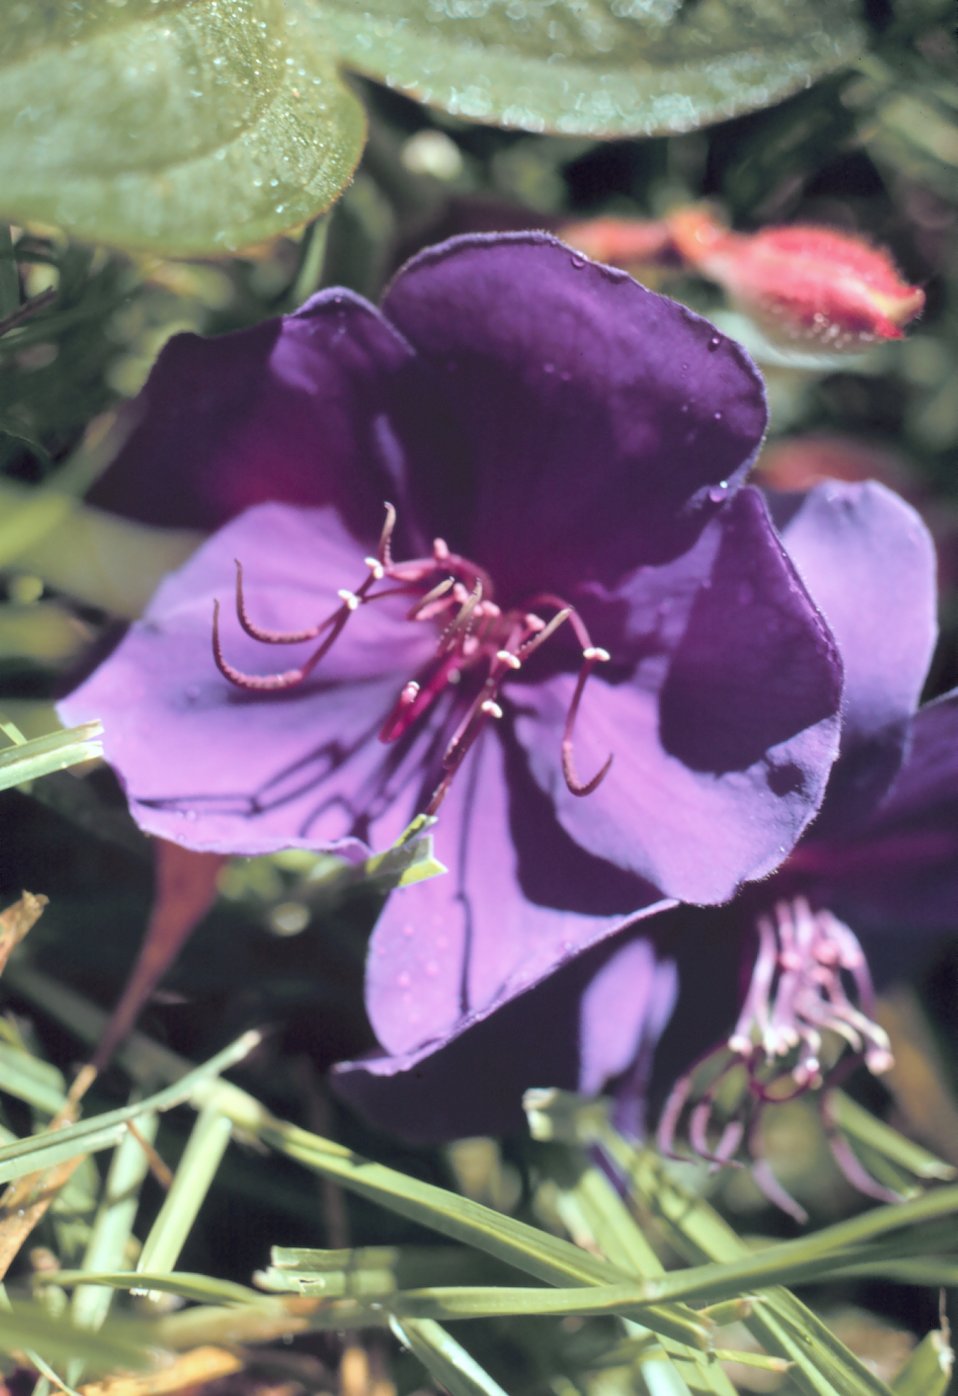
Purple flower